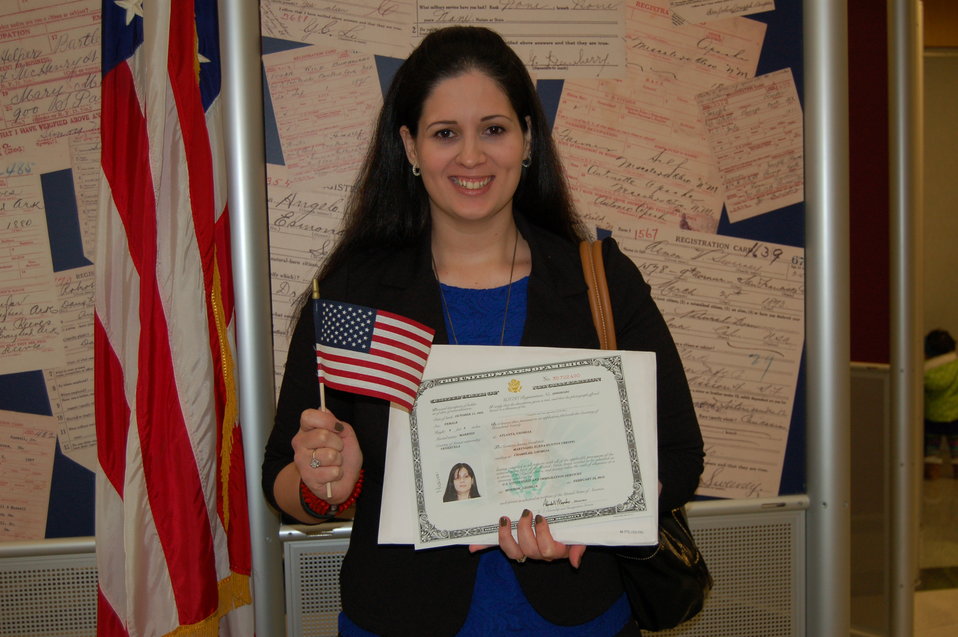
New Citizens